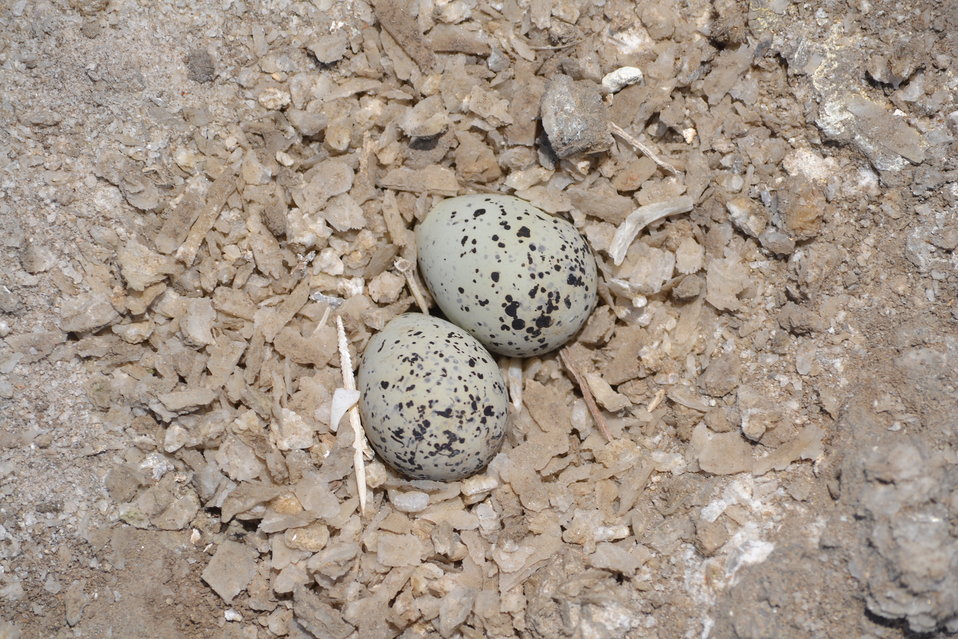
Western snowy plover (Charadrius alexandrinus nivosus) eggs snuggled in salt

Western snowy plovers (SNPL) sometimes make nests in salt pannes, salt flats, or around areas where salt is naturally extracted from the earth. Here, in the San Diego Bay, 'South Bay Salt Works' has been in operation for over 100 years; gathering salt by an old and slow process of salt evaporation ponds. On the levees of these ponds, birds such as SNPL can lay their eggs in a camouflaging nest of salt and dirt.